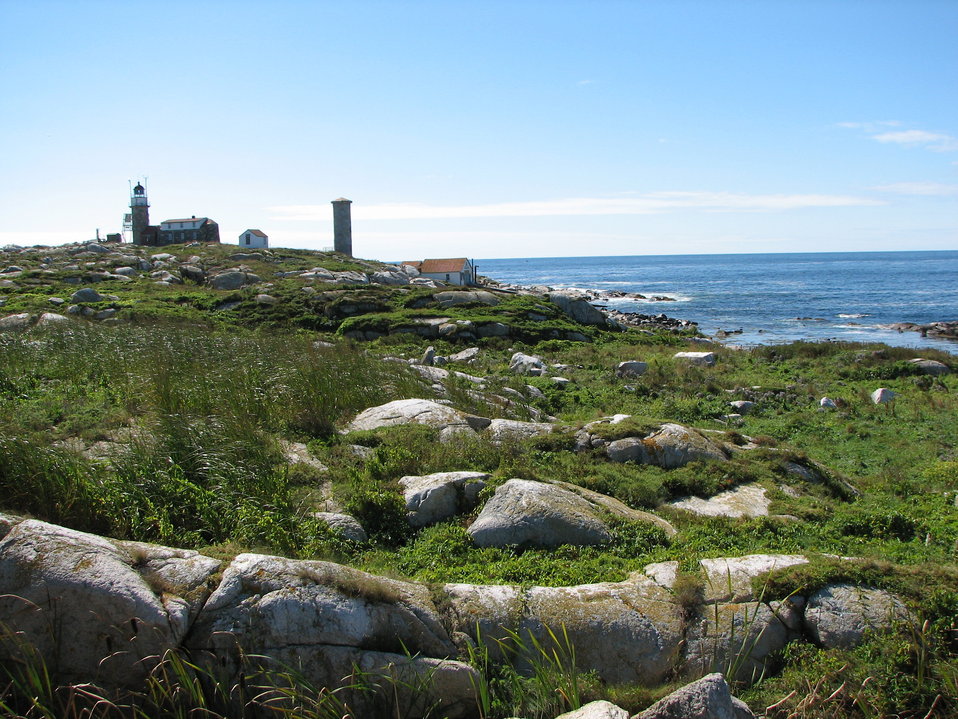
Matinicus Rock at Maine Coastal Island National Wildlife Refuge